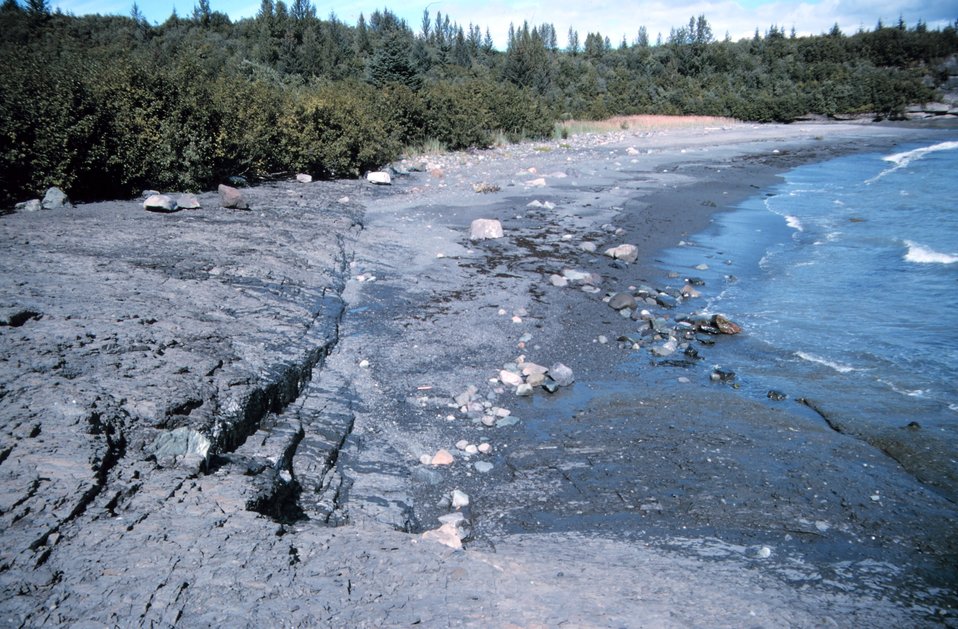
A rocky shore grading to a dark sand beach on an embayment in the Icy Bay area.